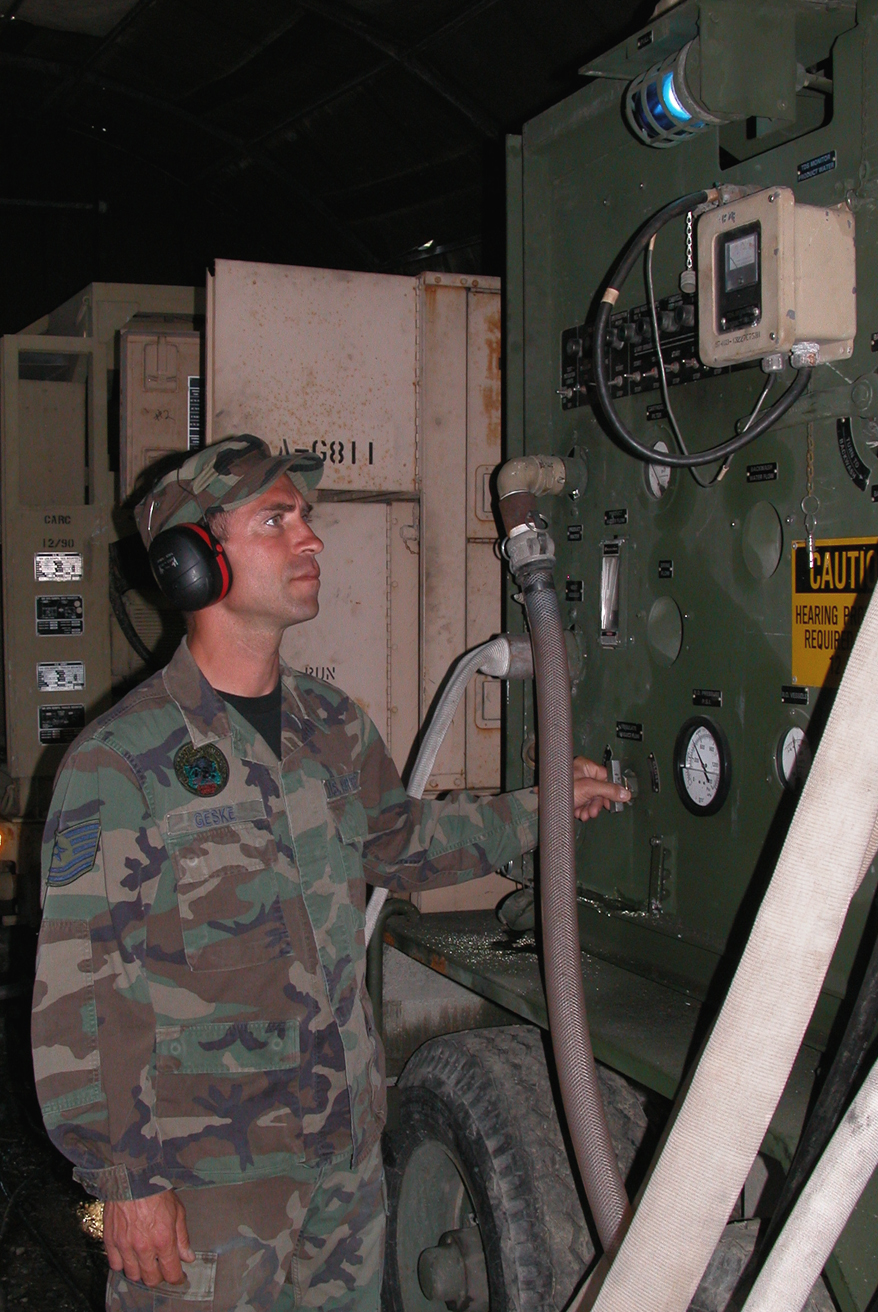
Airmen provide support during Operation Alaskan Road

CAMP WY-WUH, Alaska -- Tech. Sgt. Brian Geske checks pressure gauges and production flow on a reverse osmosis water purification unit. The unit purifies the water from a local stream and then pumps it into storage bladders for camp use. Sergeant Geske is deployed here supporting Operation Alaskan Road from the Kansas Air National Guard's 190th Civil Engineer Squadron.